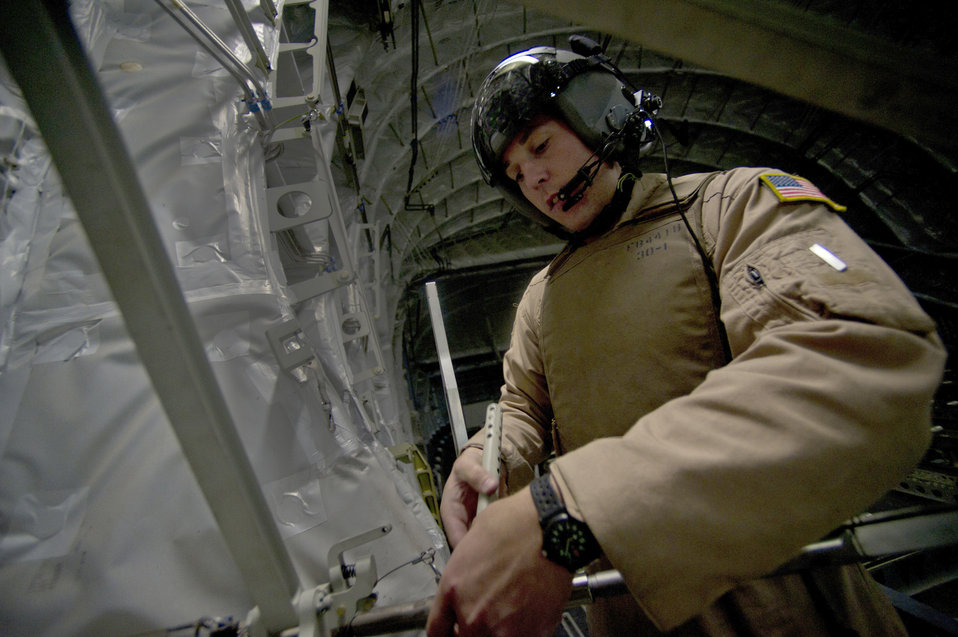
Air delivery mission

Senior Airman Drew Czarnecki performs post-flight maintenance aboard a C-17 Globemaster III April 15, 2011, after a mission in Southwest Asia. Airman Czarnecki is a loadmaster assigned to the 816th Expeditionary Airlift Squadron.